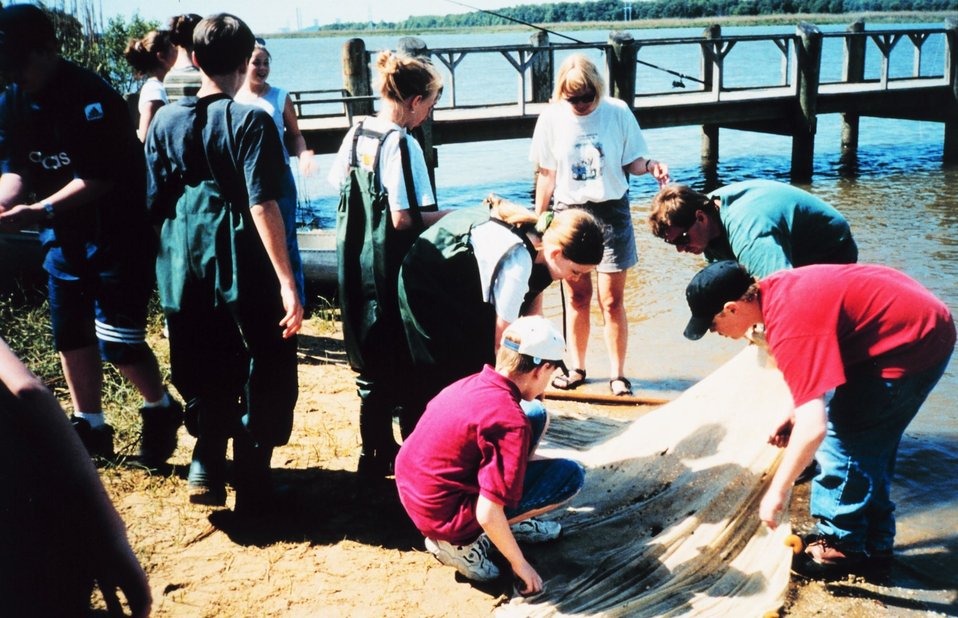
A middle school field trip to Kings Landing. Inspecting content and sorting the catch of a seine net after dragging.